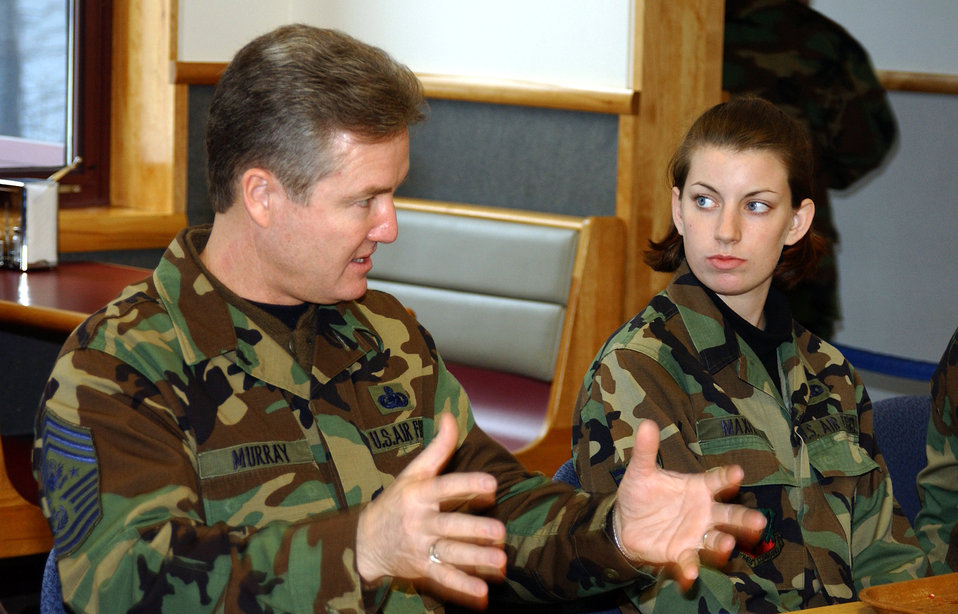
Chief Murray visits Vermont Air Guard

BURLINGTON, Vt. -- Senior Airman Alexis Maxfied listens as Chief Master Sgt. of the Air Force Gerald R. Murray discusses Air Force issues during a junior enlisted forum here March 6. Chief Murray chief visited Airman of the Vermont Air National Guard's 158th Fighter Wing to discuss the upcoming Community-Basing initiative. Under this initiative, the wing will serve as host of an active-duty detachment from Shaw Air Force Base, S.C. The detachment will include 13 Airmen, a lieutenant, a master sergeant and 10 new Airmen from various maintenance technical schools. The initiative is one of the Air Force's Future Total Force concepts for effectively integrating the active-duty, Guard and Reserve components. "Our new Airmen will learn a tremendous amount about maintaining our F-16 (Fighting Falcons) and equally as important, they'll learn about the ANG," said Chief Murray. "They will live, work and deploy together." Airman Maxfield is a crew chief.